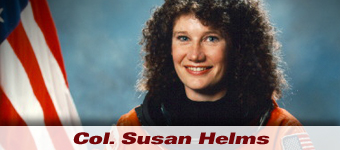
Jackie Cochran

Jacqueline Cochran history spotlight graphic .